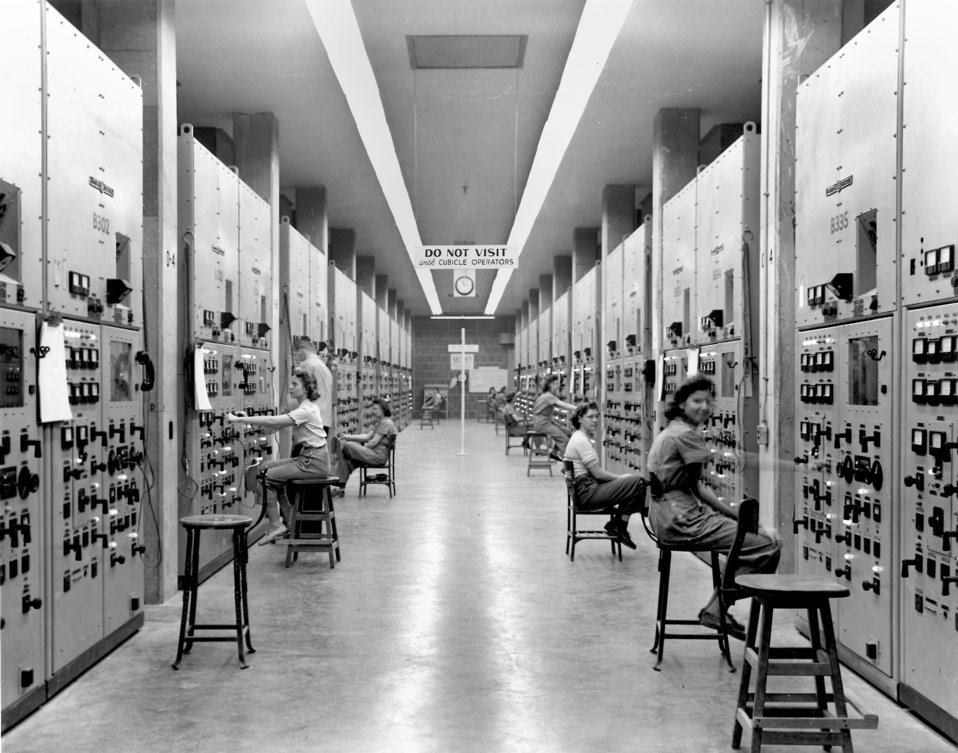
Cubicle Operators Y-12 Calutron Oak Ridge

y-12-141 DOE photo by Ed Westcott Oak Ridge, Tennessee 1944